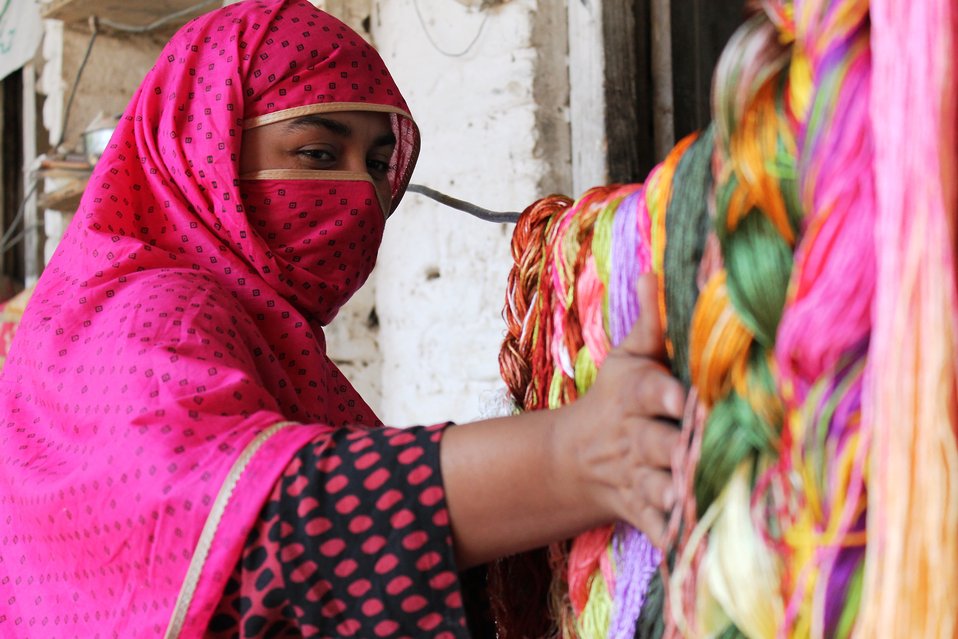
Embellished Fabrics Value Chain Development Initiative under the USAID's Entrepreneurs Project

Swat, October 18, 2012: The world famous Swati stitch, takes birth from the hard work and passion of our women embellishers, who use exotic colours and patterns to combine with meticulous stitch counting and age-old ingenuity. USAID is supporting 24,000 women embellishers across Pakistan.